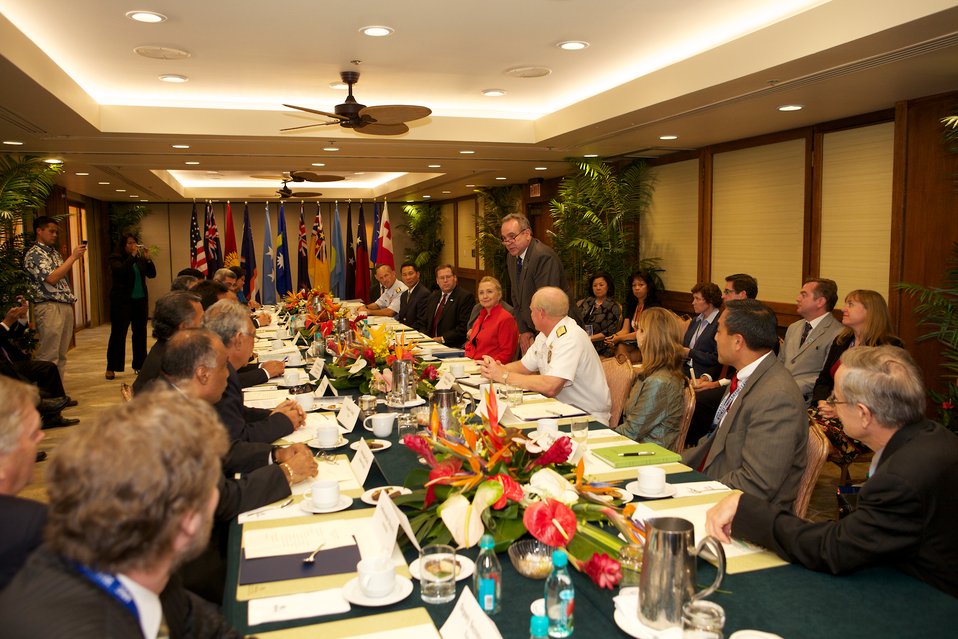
Secretary Clinton Meets With Pacific Island Leaders

U.S. Secretary of State Hillary Rodham Clinton meets with Pacific Island Country leaders to discuss regional issues and ongoing U.S. engagement in the Pacific in Honolulu, Hawaii, on November 12, 2011.